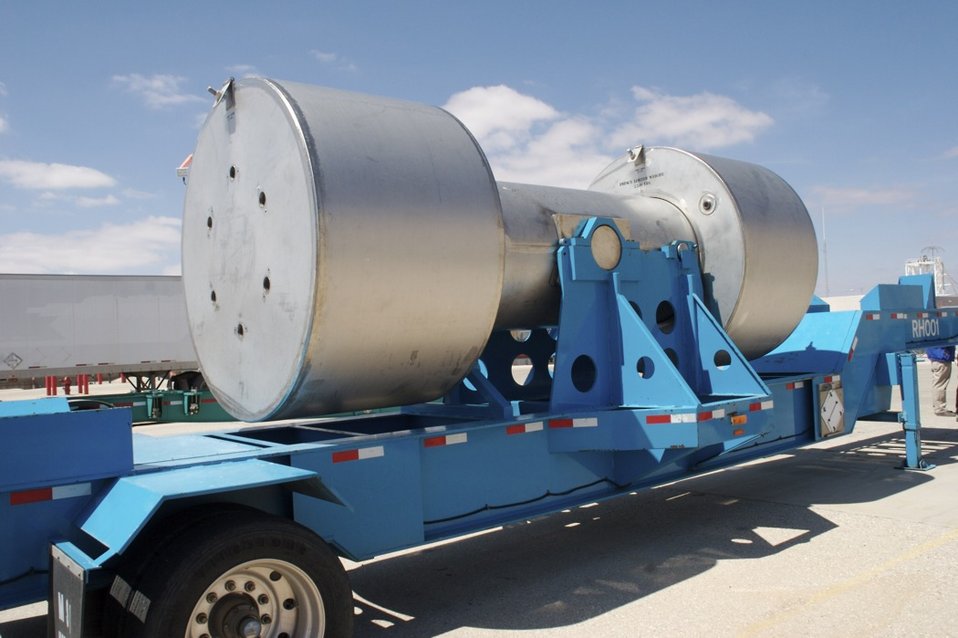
Waste Isolation Pilot Plant receives the first shipment of Remote-Handled (RH) Transuranic (TRU) Radioactive Waste on January 23, 2007.

The waste, which consisted of three 30 gallon drums of radioactive debris waste and originated at Idaho National Laboratory, was transported inside a shielded RH-72B shipping cask, providing the same low radiation levels as the contract-handled (CH) TRU waste that have been shipped to WIPP since 1999.